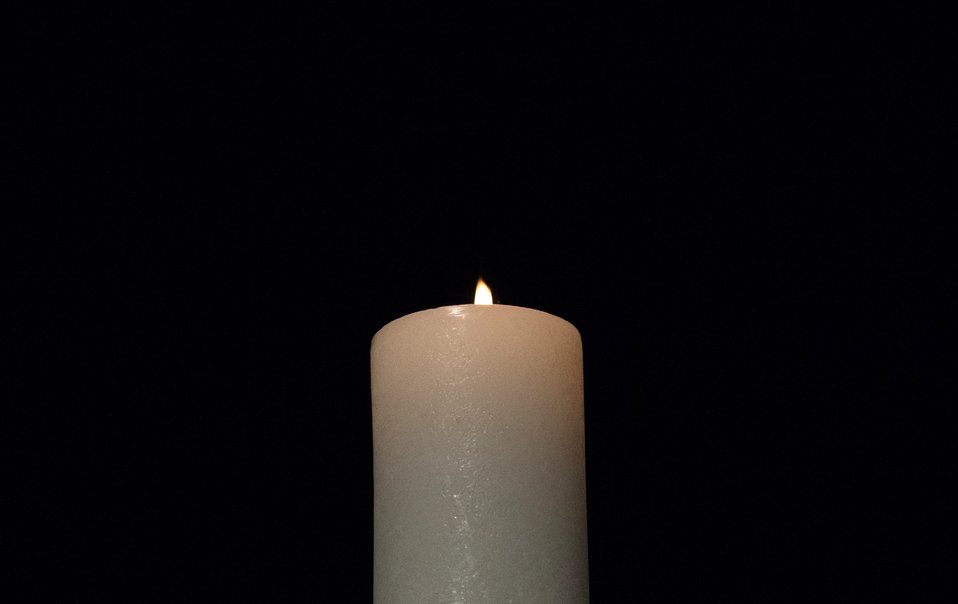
A ceremonial candle was lit and burns, during the 2013 Federal Inter-Agency Holocaust Remembrance Day, at the Lincoln Theater, on Wednesday, April 17, 2013, in Washington, D.C. Since the 1979 President’s Commission on the Holocaust, an annual proclamation signed by the President of the United States recognizes the importance of remembering the atrocities of the Holocaust that should never be forgotten or be ignored.